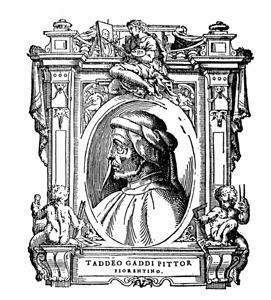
Illustratio from 'Le Vite' by Giorgio Vasari, edition of 1568. For the artist portrayed see filename